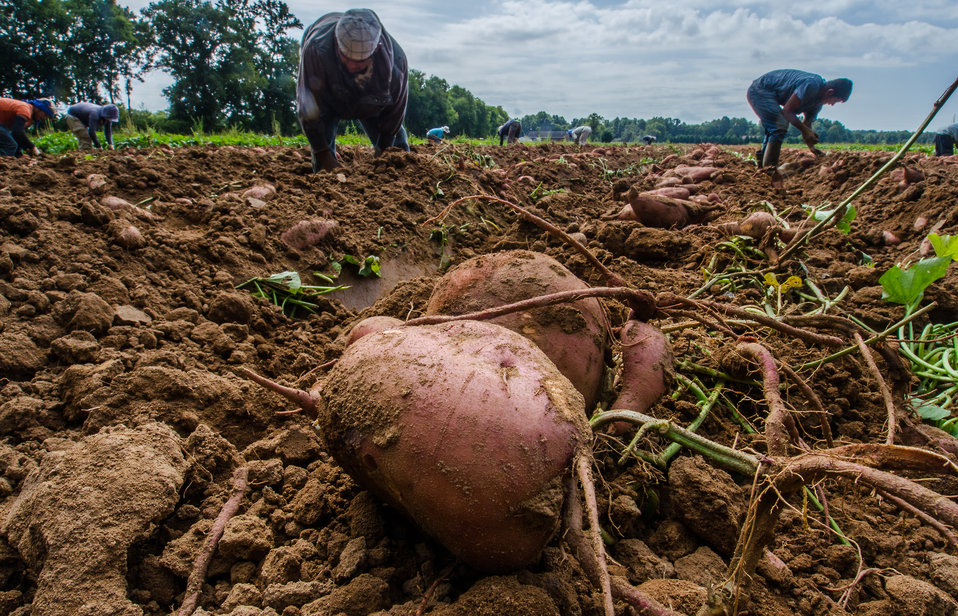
Harvested hand picked large sweet potatoes, at Kirby Farms in Mechanicsville, VA on Friday, Sept. 20, 2013. 200 acres of the farm are devoted to eggplant, spinach, beets, tomato, jalapeno peppers, melons and a variety of greens. Soybeans and small grain are grown on the remaining 300 acres. Using rotational crop practices allows Kirby Farms to double and triple crop yields. Wholesalers, who buy from this farm, sell the produce to major supermarkets in the Mid-Atlantic region, from North Carolina to Maryland. Restaurants in the local area prepare and serve the local bought produce to patrons in the Richmond, VA metropolitan area.